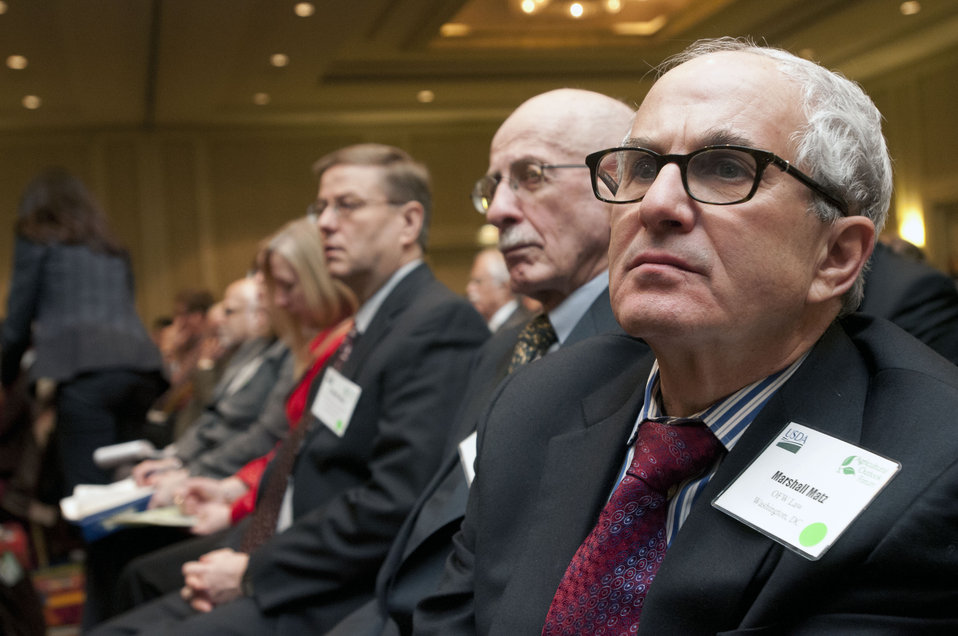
Audience members listen to speakers at the 2013 Agricultural Outlook Forum, in Arlington, VA. on Feb. 21, 2013.